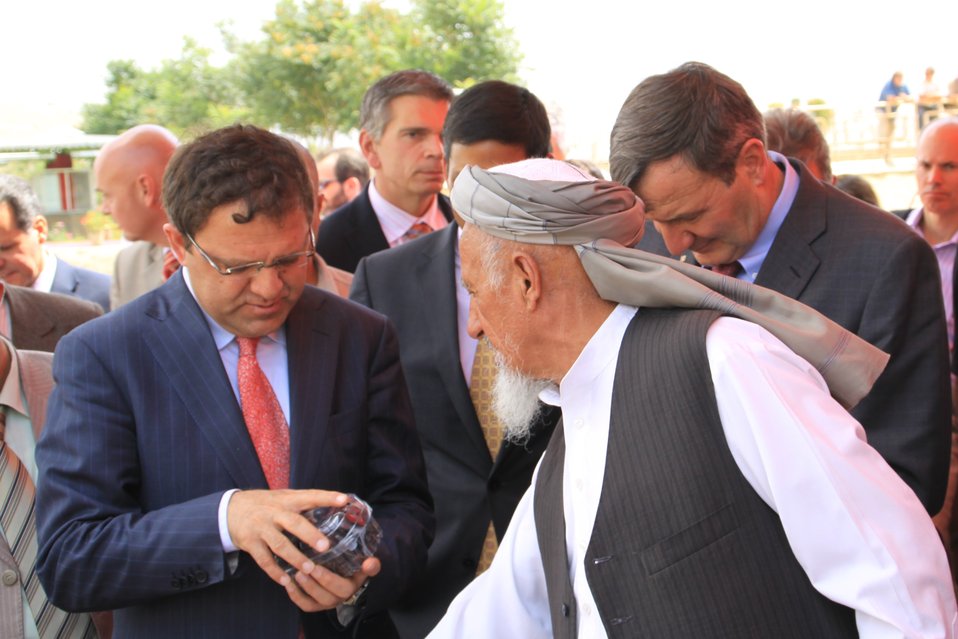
Badam Bagh Farm